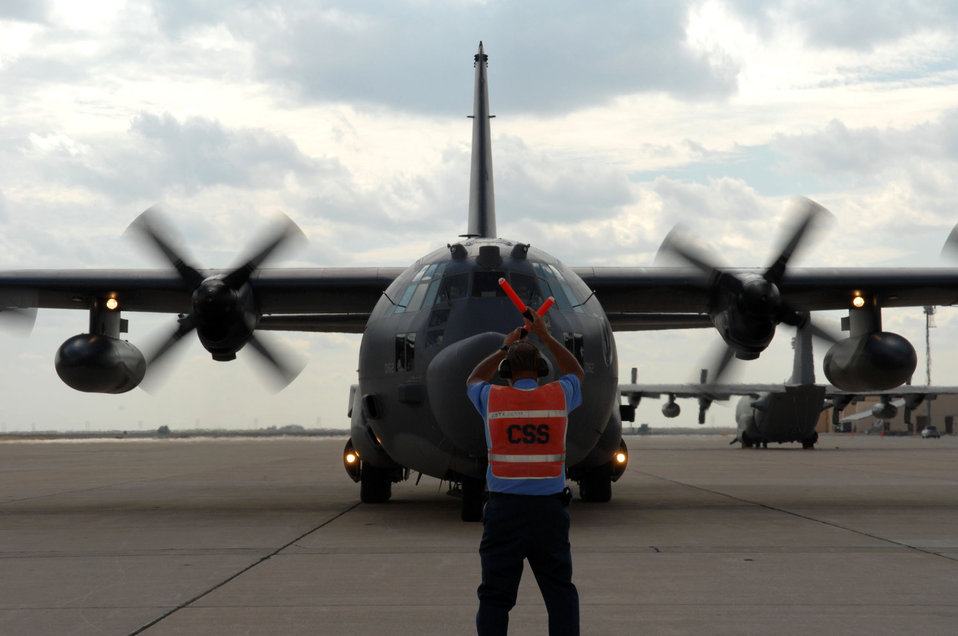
New chapter for Air Force Special Operations begins

A crew chief leads in a C-130 Hercules Sept. 29 after landing at Cannon Air Force Base, N.M. Air Force Special Operations Command leaders assumed command of Cannon in a redesignation and change-of-command ceremony Oct. 1.